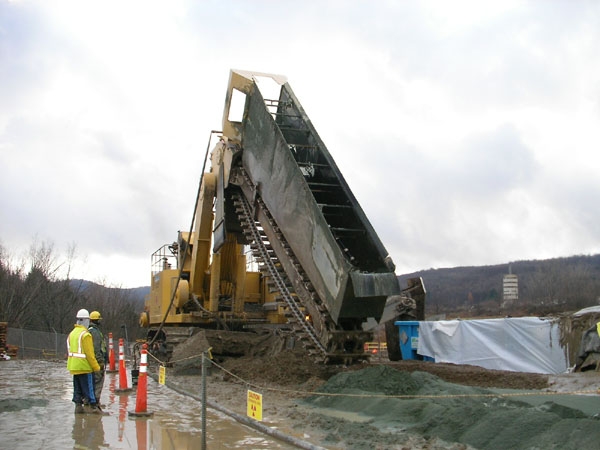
Completing the Permeable Treatment Wall (PTW) Installation

The close of 2010 came with the completion of three of the four major projects funded by the West Valley Demonstration Project’s (WVDP) $63 million Recovery Act allocation.